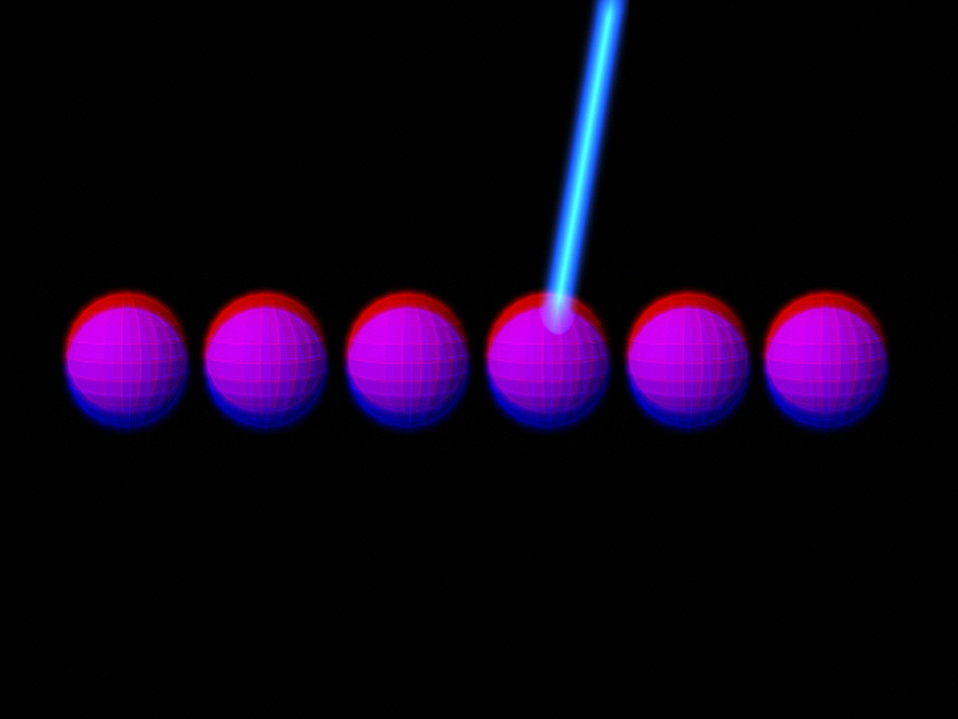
NIST Physicists Coax Six Atoms into Quantum 'Cat' State

NIST researchers have succeeded in coaxing six ions into an unusual quantum 'cat' state in which their nuclei are collectively spinning clockwise and counterclockwise at the same time.

Credit: Bill Pietsch, Astronaut 3 Media Group, Inc.